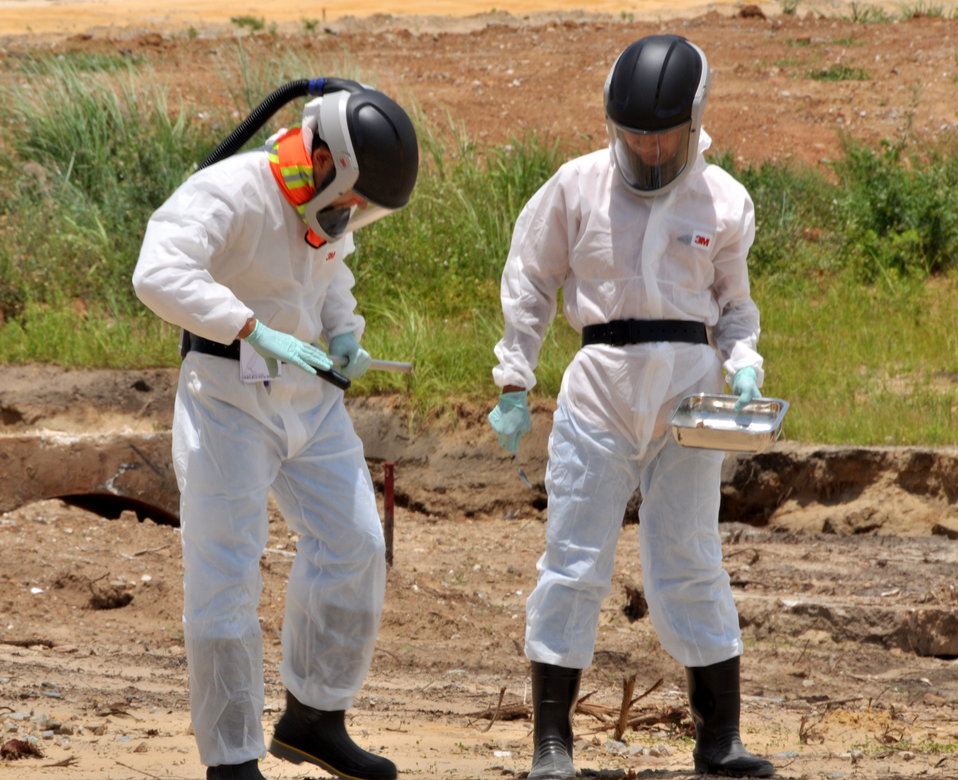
USAID Dioxin Contamination Project Progress: Soil Sampling

Progress at the Environmental Remediation of Dioxin Contamination Project at Danang Airport

July 16, 2013